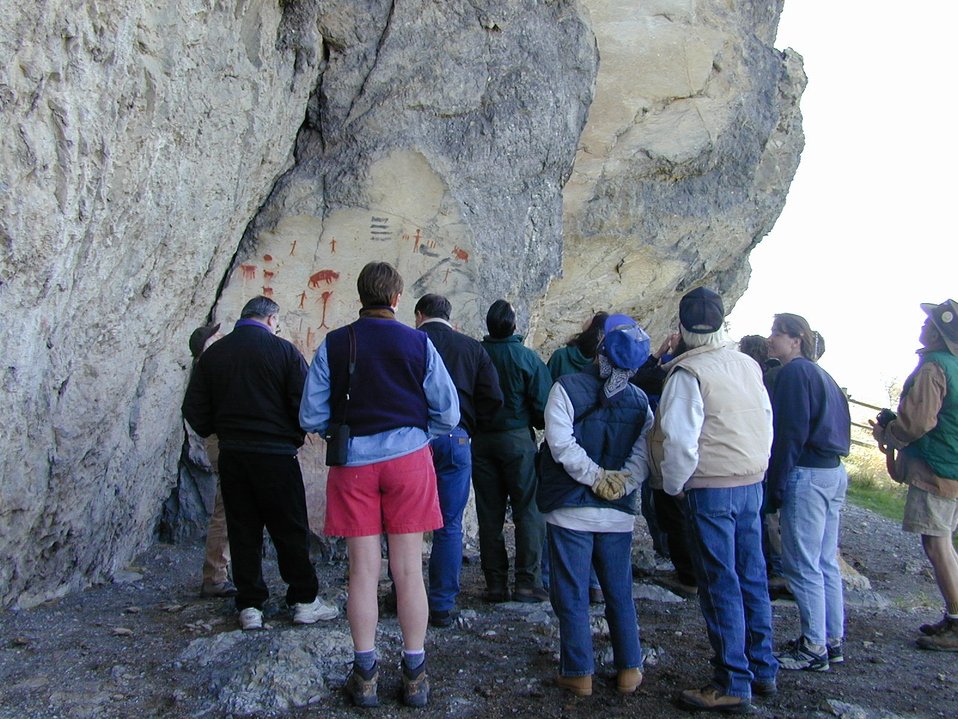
Birch Creek Valley Idaho Falls Field Office USRD Upper Snake River District